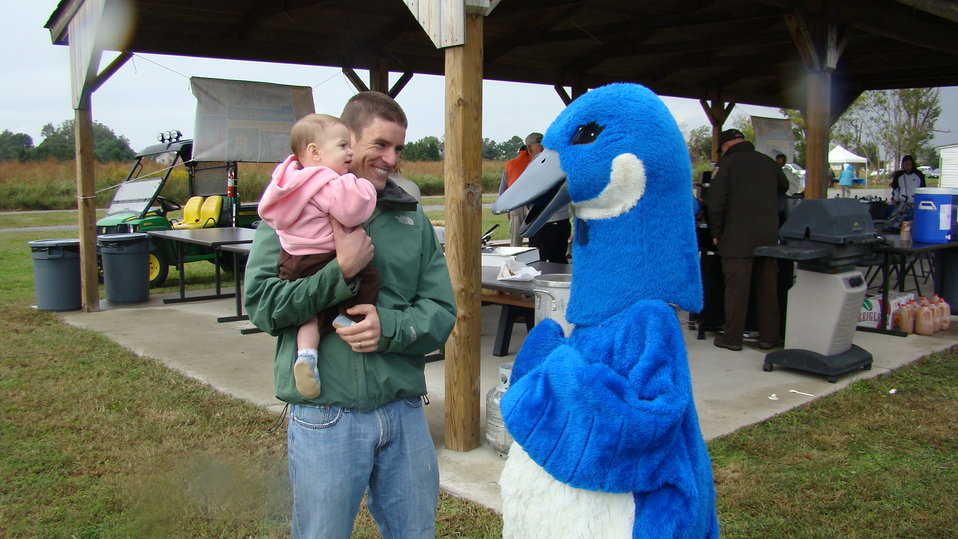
Rappahannock River Valley NWR 15th Anniversary

Puddles greeted young visitors.